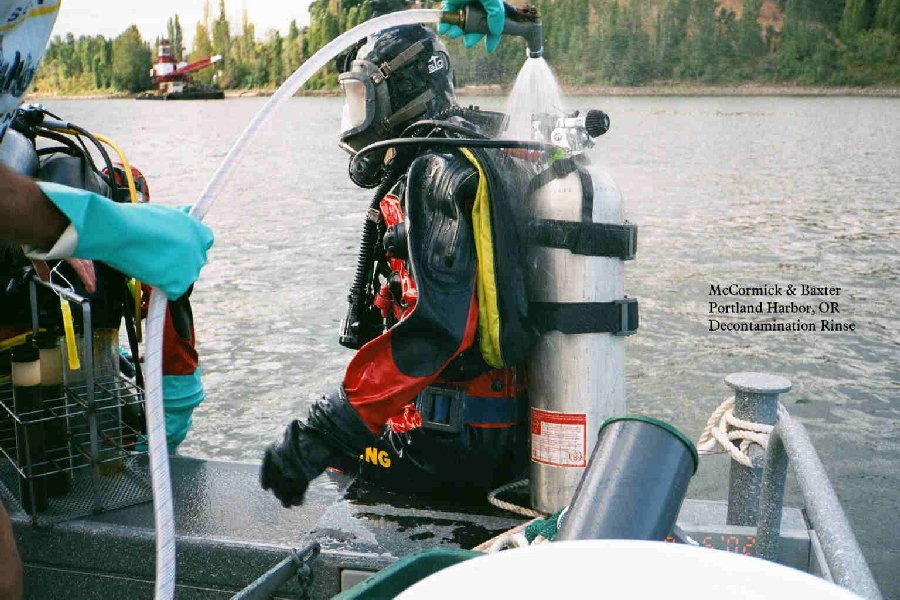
Diver Decon, Portland Harbor Superfund Site, Oregon

EPA diver Scott Grossman is decontaminated after taking samples at the Portland Harbor Superfund Site. Thorough rinsing and decon with clean water is an important step after diving in waters polluted with bacterial contamination, as is the Willamette River after rainfall.